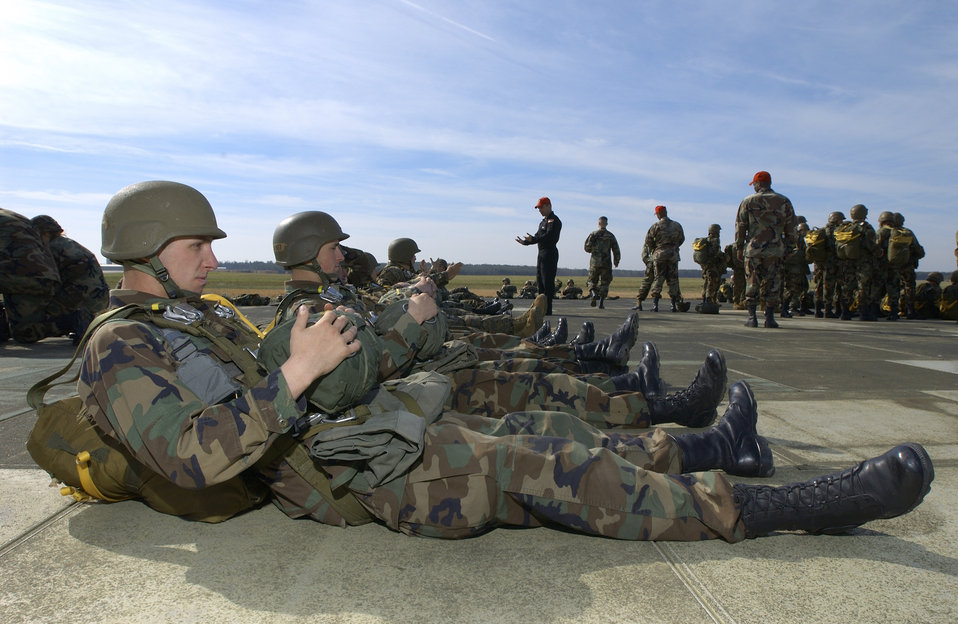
Crunch time

FORT LEE, Va. -- Students of the Aerial Delivery and Field Services Department located at the U.S. Army Quartermaster Center and school here, prepare to jump from a C-130 Hercules out of Pittsburg, Pa., March 27. The training provides students the practice they need to perform their jobs in an operational environment.